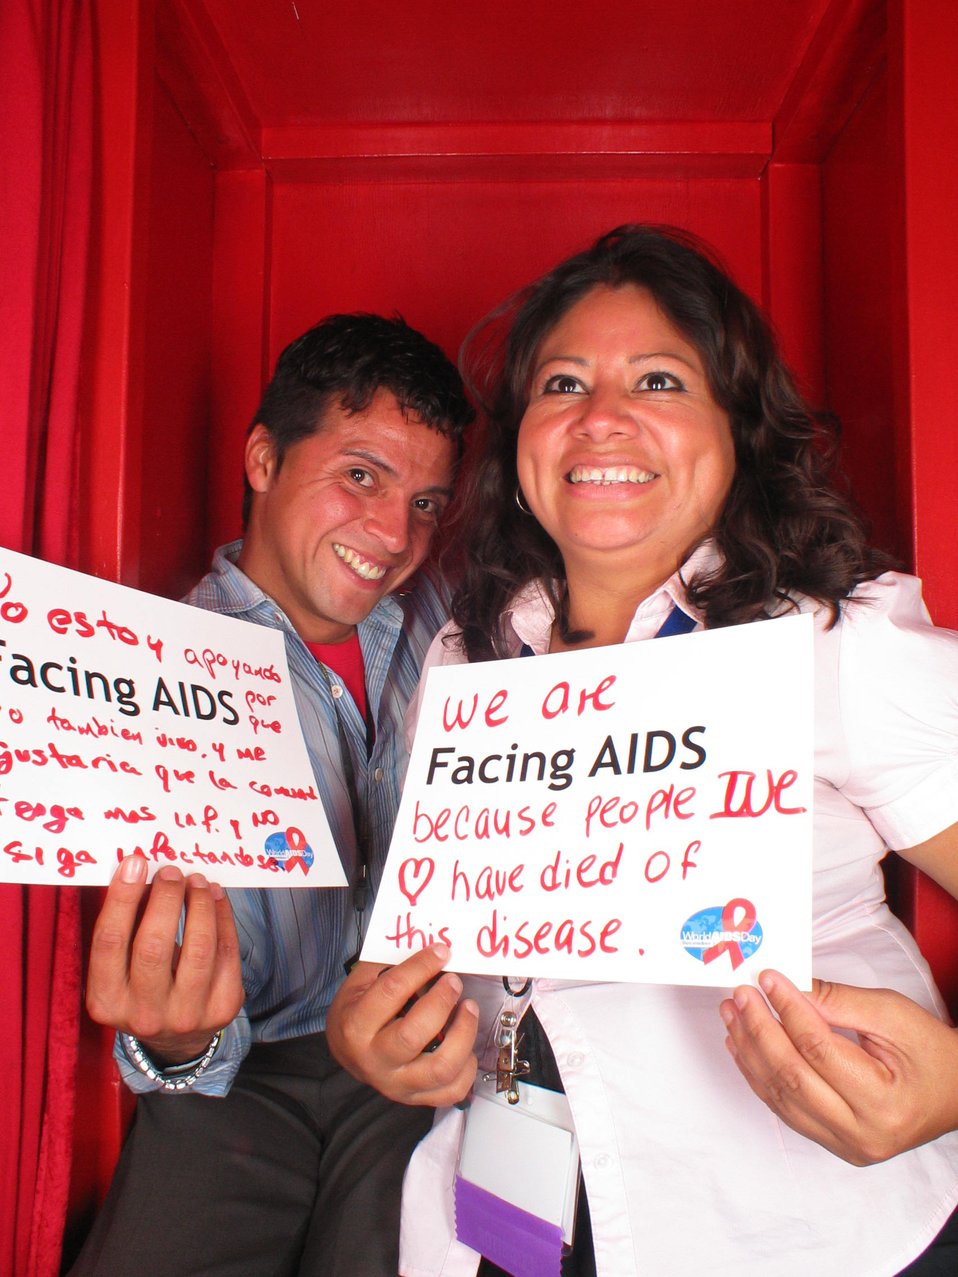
We are Facing AIDS because people we love have died of the disease.